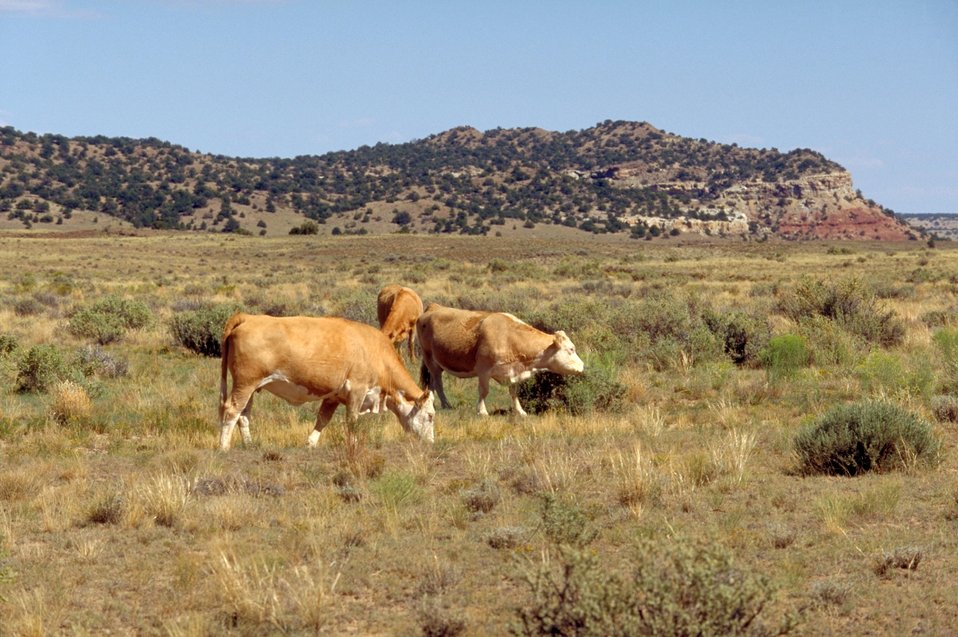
Livestock grazing on the San Rafael Swell.